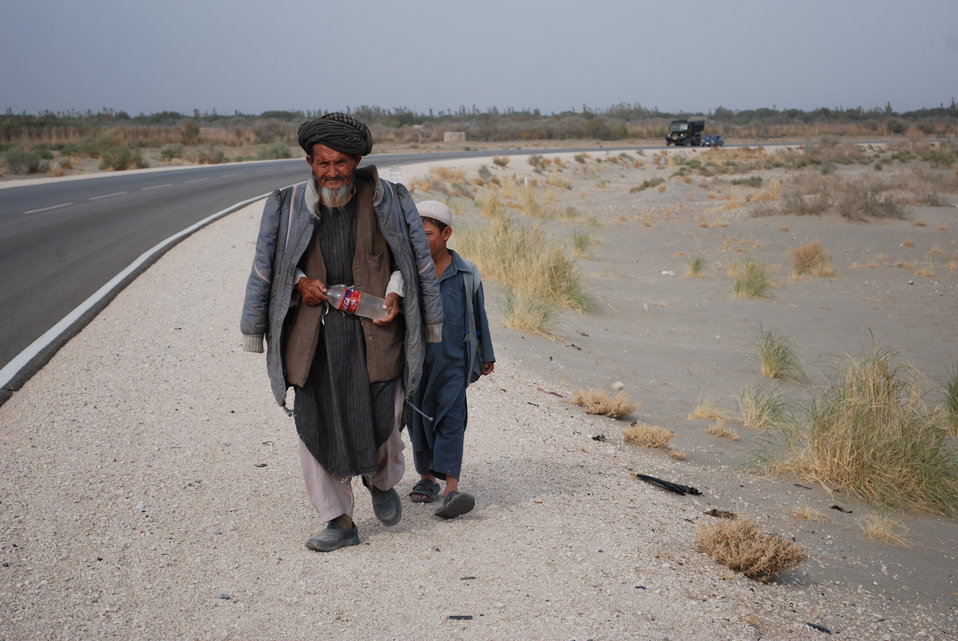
'On the Road' in Balkh Province